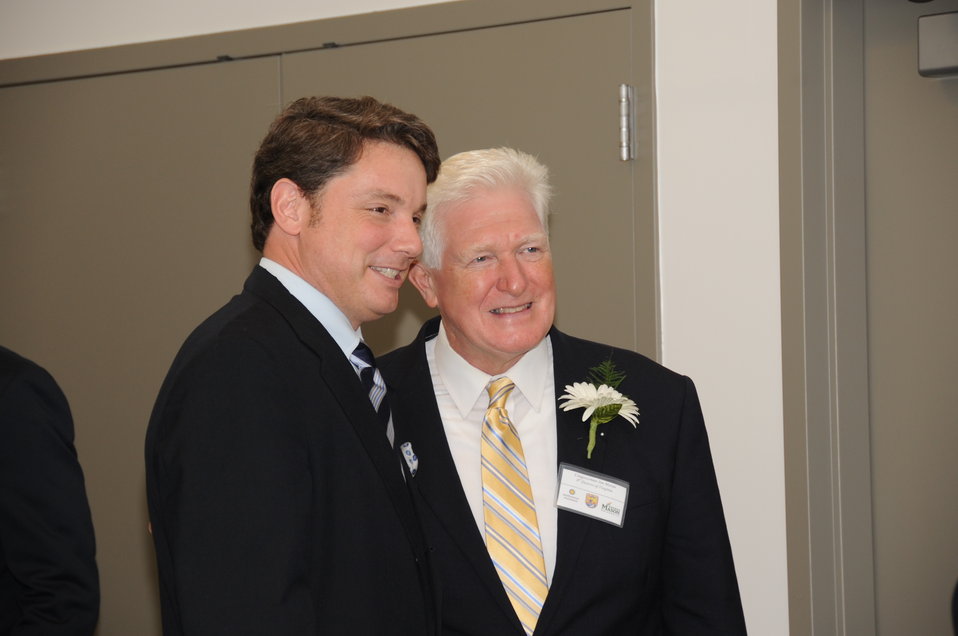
Together in Conservation

Memorandum of Understanding Signing Ceremony with U.S. Fish and Wildlife Service, Smithsonian Institution, and George Mason University. October 26, 2012